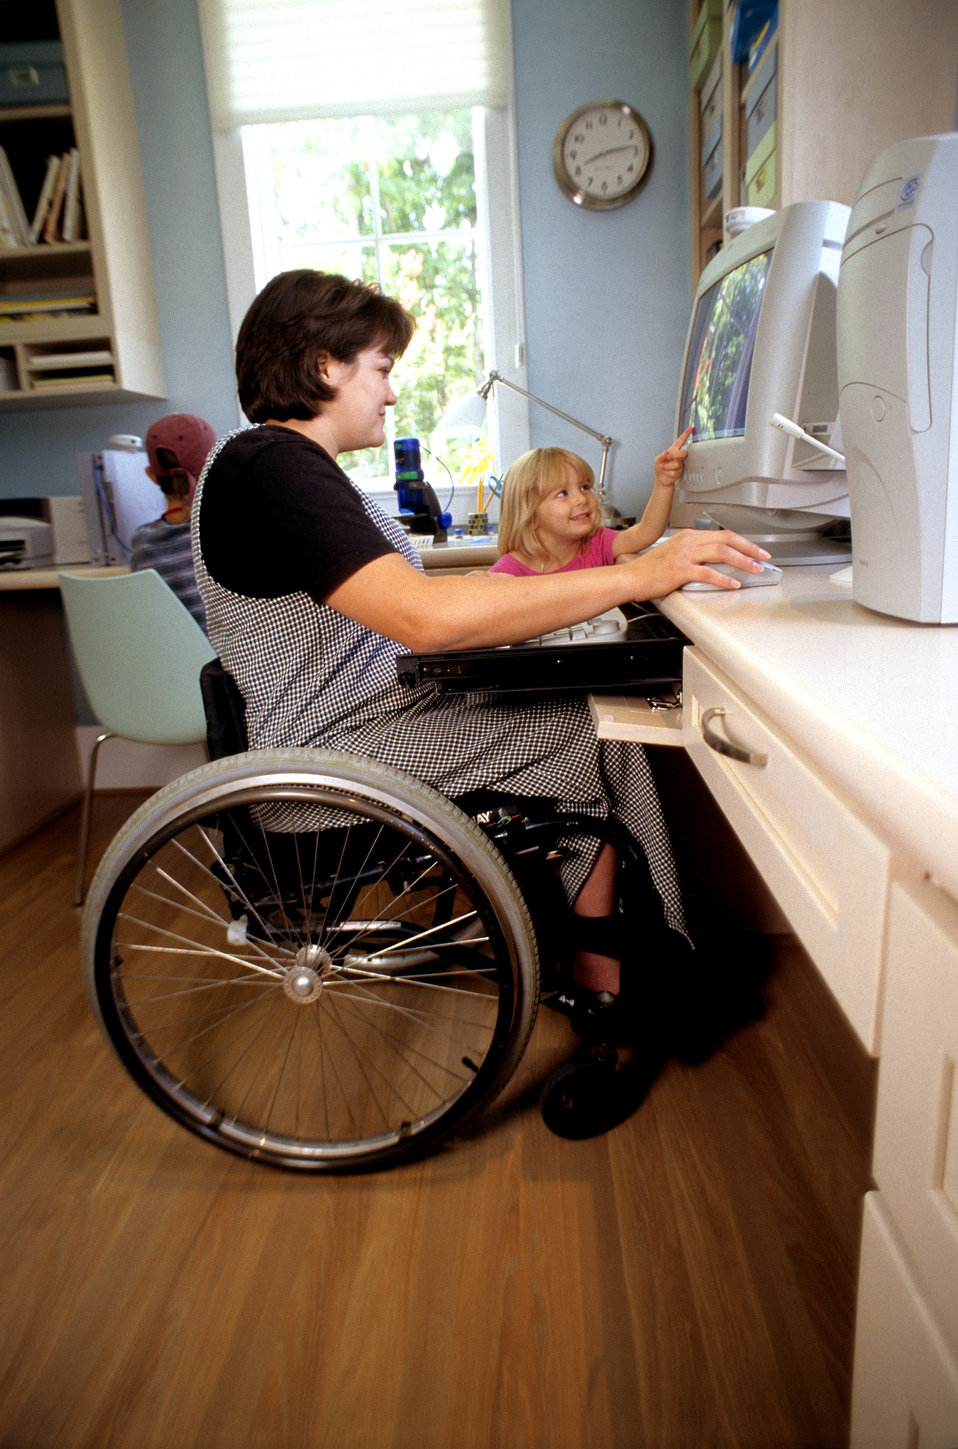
This 2000 image depicted a wheelchair-seated woman seated at her home computer workstation, while two children, a young girl and boy, were present in the background. The inclusion of the mobility-impared woman, and the two children showed that by carefully planning a layout and storage design, this in-home office was arranged in order to conveniently accommodate a wide range of users. The work counter accommodated different types of seated users and age groups. Also, the children's presence showed this to be an example of how good design could facilitate intergenerational interaction.